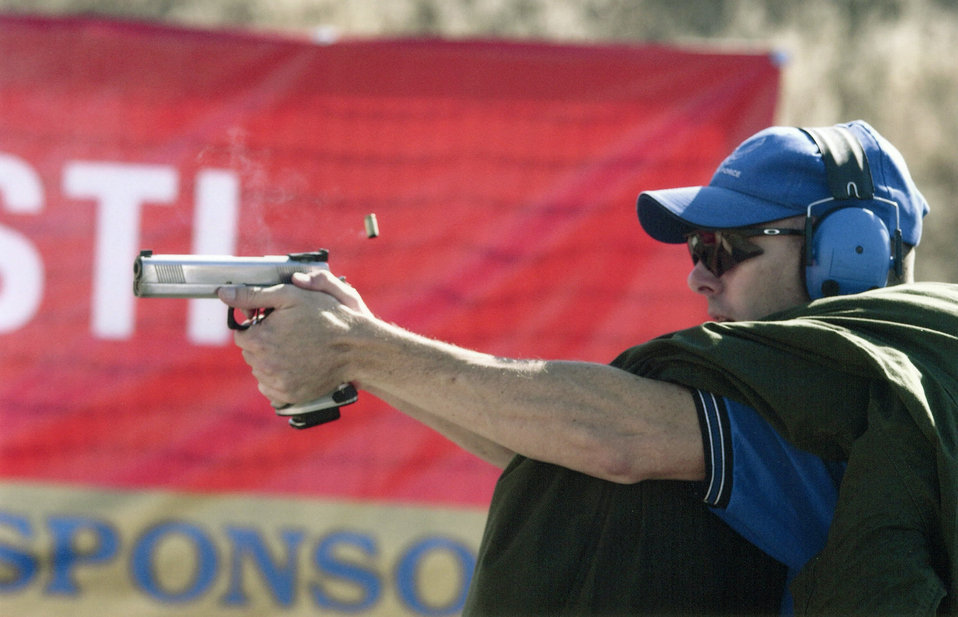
Airman sets sights on shooting championship

OFFUTT AIR FORCE BASE, Neb. -- Maj. Roger Sherman fires his weapon during the U.S. Practical Shooting Association National Championship in July 2003. The shooting scenario required Major Sherman to hold a 40-pound